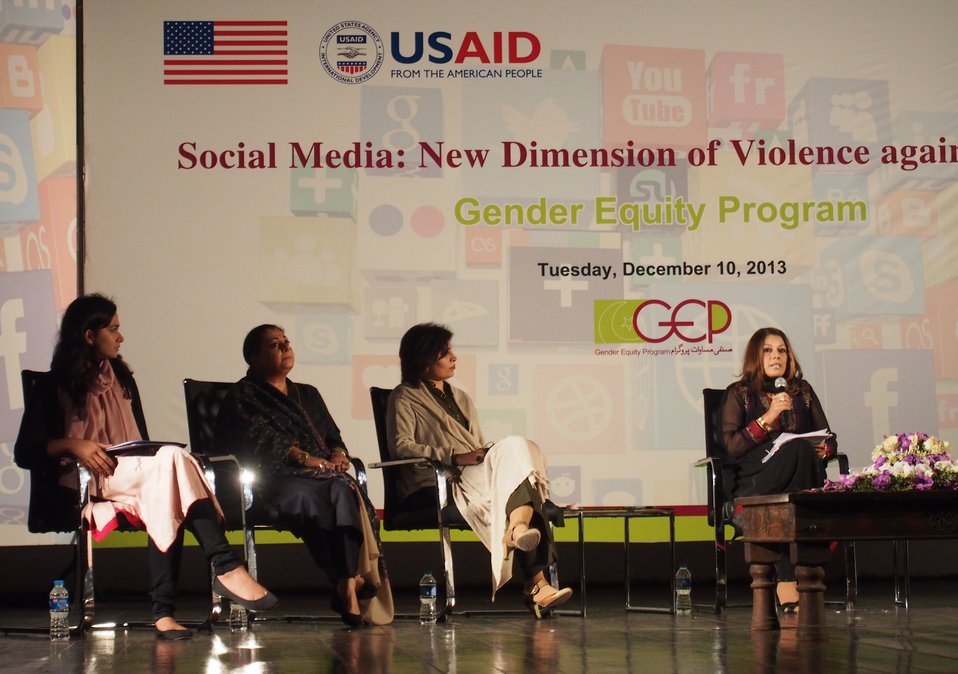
Social Media Event

Participants at a United States funded panel discussion on cyber-bullying today condemned the rising trend of cyber-crime against women and said that large number of Pakistani girls and women are victims of this kind of violence, which mainly includes cyber-stalking, blackmailing and pornography. They said that due to existing social norms, women are more vulnerable to the negative aspects of information technology.

The panel discussion, titled “Social Media: New Dimension of Violence against Women,” was part of the 16 Days of Activism campaign about violence against women. It took place at the Pakistan National Council of Arts and was sponsored by Aurat Foundation’s Gender Equity Program (GEP), which is funded by the United States government through U.S. Agency for International Development (USAID).